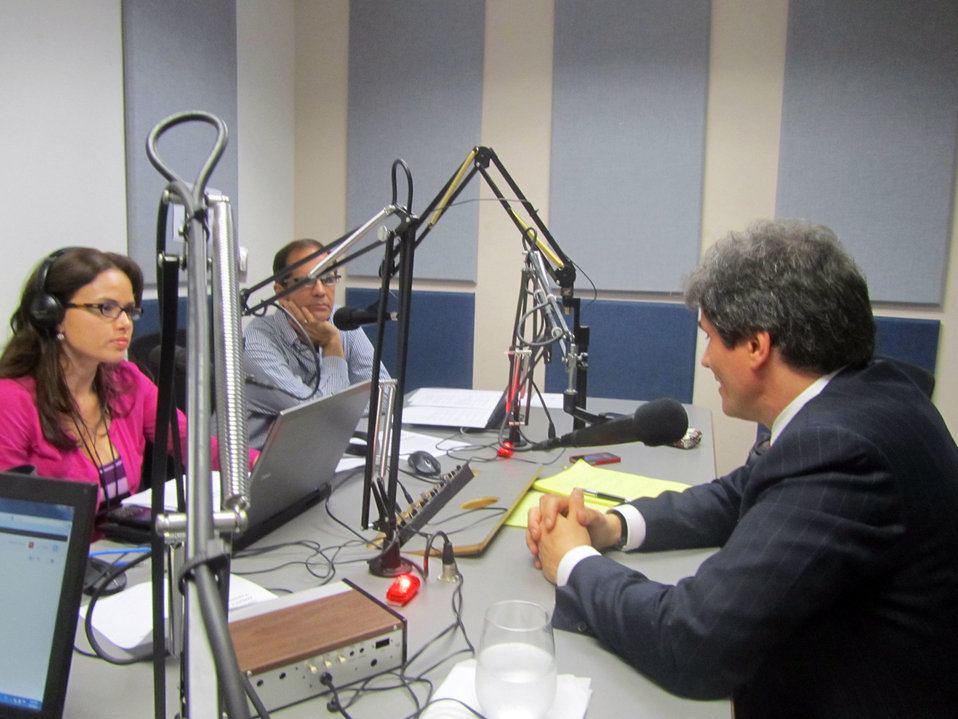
Assistant Secretary Fernandez Participates in an Interview With Radio Actualidad

Assistant Secretary of State for Economic and Business Affairs Jose W. Fernandez discusses economic and trade relations with the Americas and his recent trip to Mexico with radio hosts at Radio Actualidad in Miami, Florida, February 6, 2013.